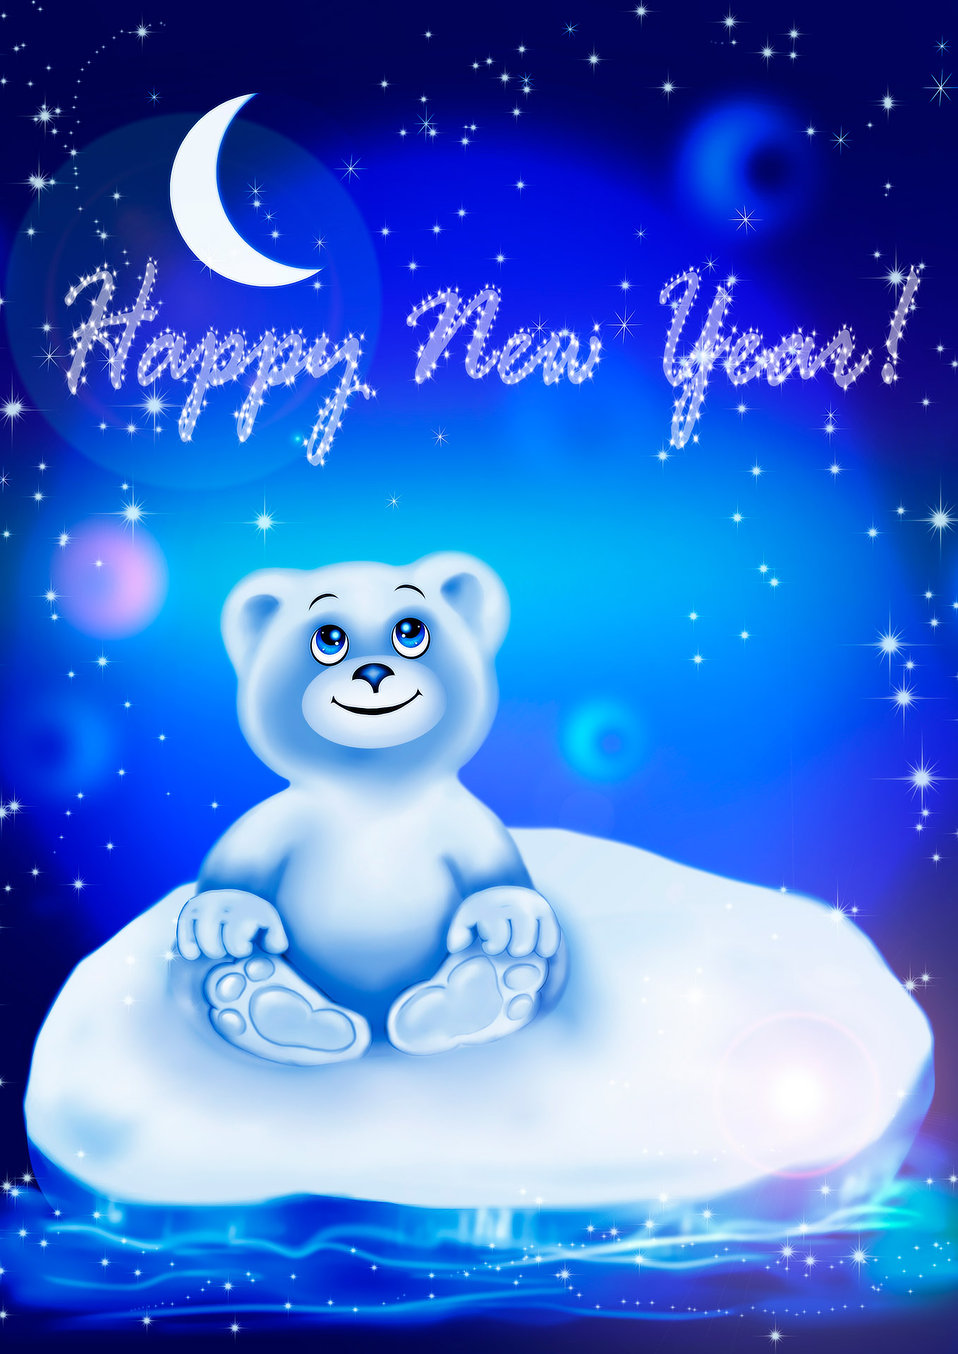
Happy new year!

Little bear happy new year..